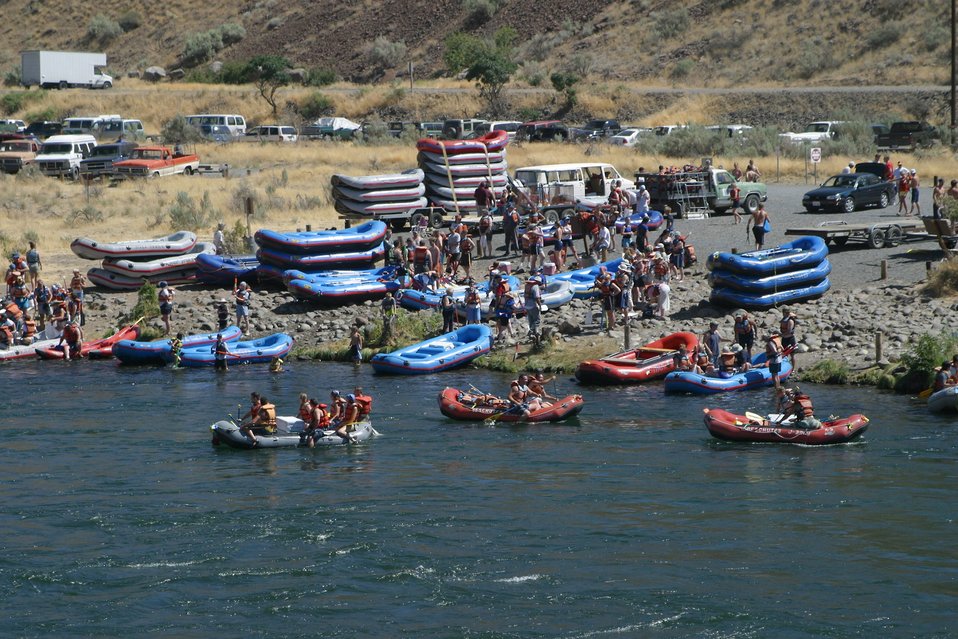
Over 200,000 people a year float the Lower Deshutes River.